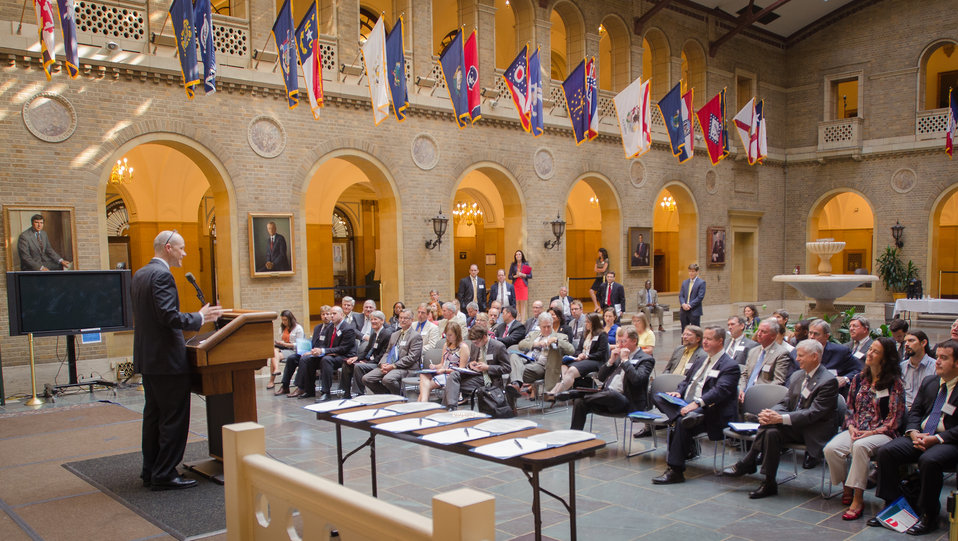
U.S. Department of Agriculture (USDA) Rural Development (RD) Under Secretary Doug O’Brien moderates the USDA Wood Energy Memorandum of Understanding, and awarded wood energy grants announcements event, at the USDA Headquarters, in Washington, D.C., on Wednesday, September 11, 2013. Signing the MOU are partnership leaders Biomass Thermal Energy Council, Executive Director Joseph Seymour; Alliance for Green Heat, President John Ackerly, USDA Deputy Secretary Krysta Harden; Pellet Fuels Institute Executive, Director Jennifer Hedrick; Biomass Power Association, President and CEO Bob Cleaves, and Secretary Thomas Vilsack who signed it earlier.
The partnership agreement focuses on promoting wood energy nationwide as a means to address fire risks, bolster rural economic development, improve air quality, and help meet the Obama Administration’s renewable energy and energy efficiency goals. These organizations support the use of wood energy across the scale of users – from residential users, to commercial and intuitional facilities, to industrial production of heat and or electricity to drive businesses and feed the electrical grid.
Under the terms of the five grants announced by Deputy Secretary Harden, private, state and federal organizations will work together to stimulate the development of additional wood energy projects in their states. Collectively, $2.9 million will be spent o this effort -- $1.1 million on federal funds and $1.8 million in non federal funds. For more information o0n the cooperative agreement program, visit na.fs.fed.us.werc/wood-energy/ USDA Photo by Lance Cheung.